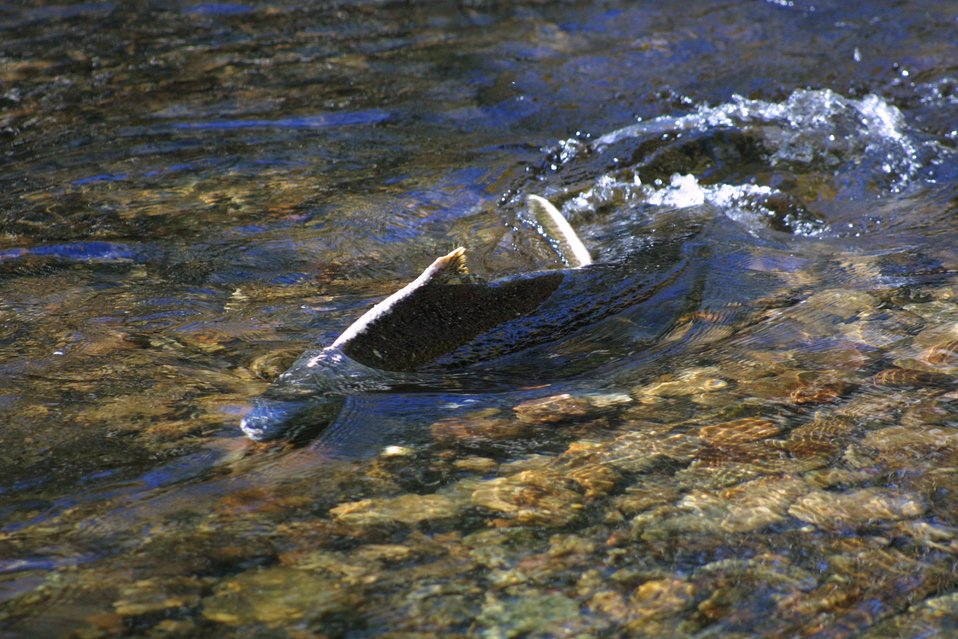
Adult Chinook Salmon spawning in Upper Tioga Creek, 11/8/01. Gravel bar created by boulder weir constructed to improve habitat.